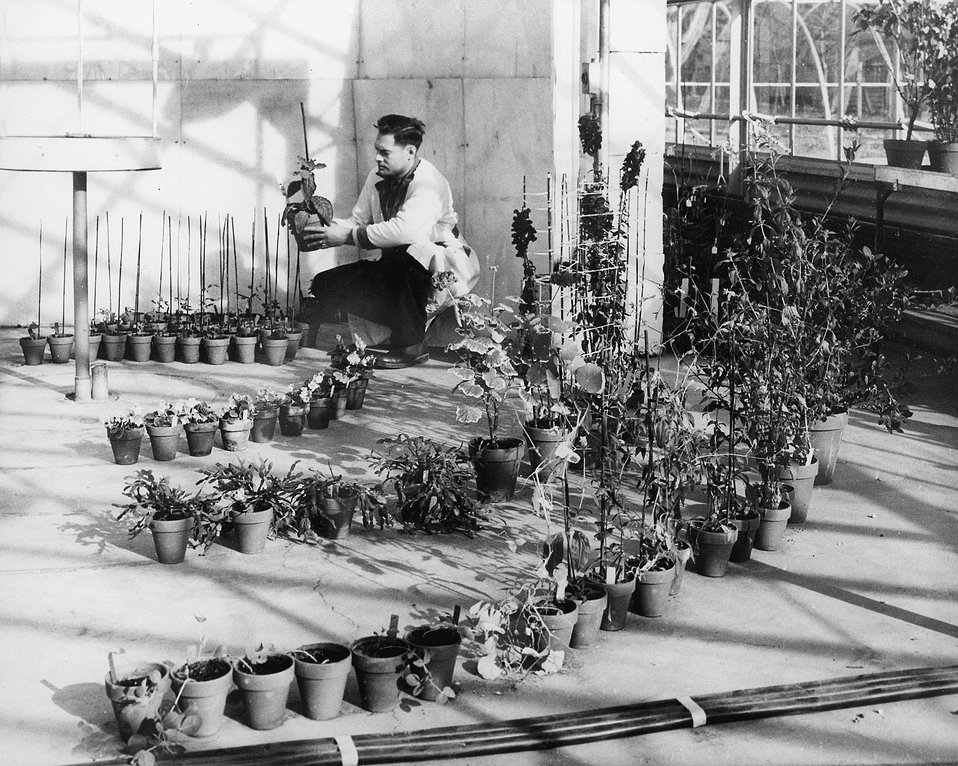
In the gamma greenhouse, plants are arranged around a 15-curie source of Cobalt-60. c. 1962